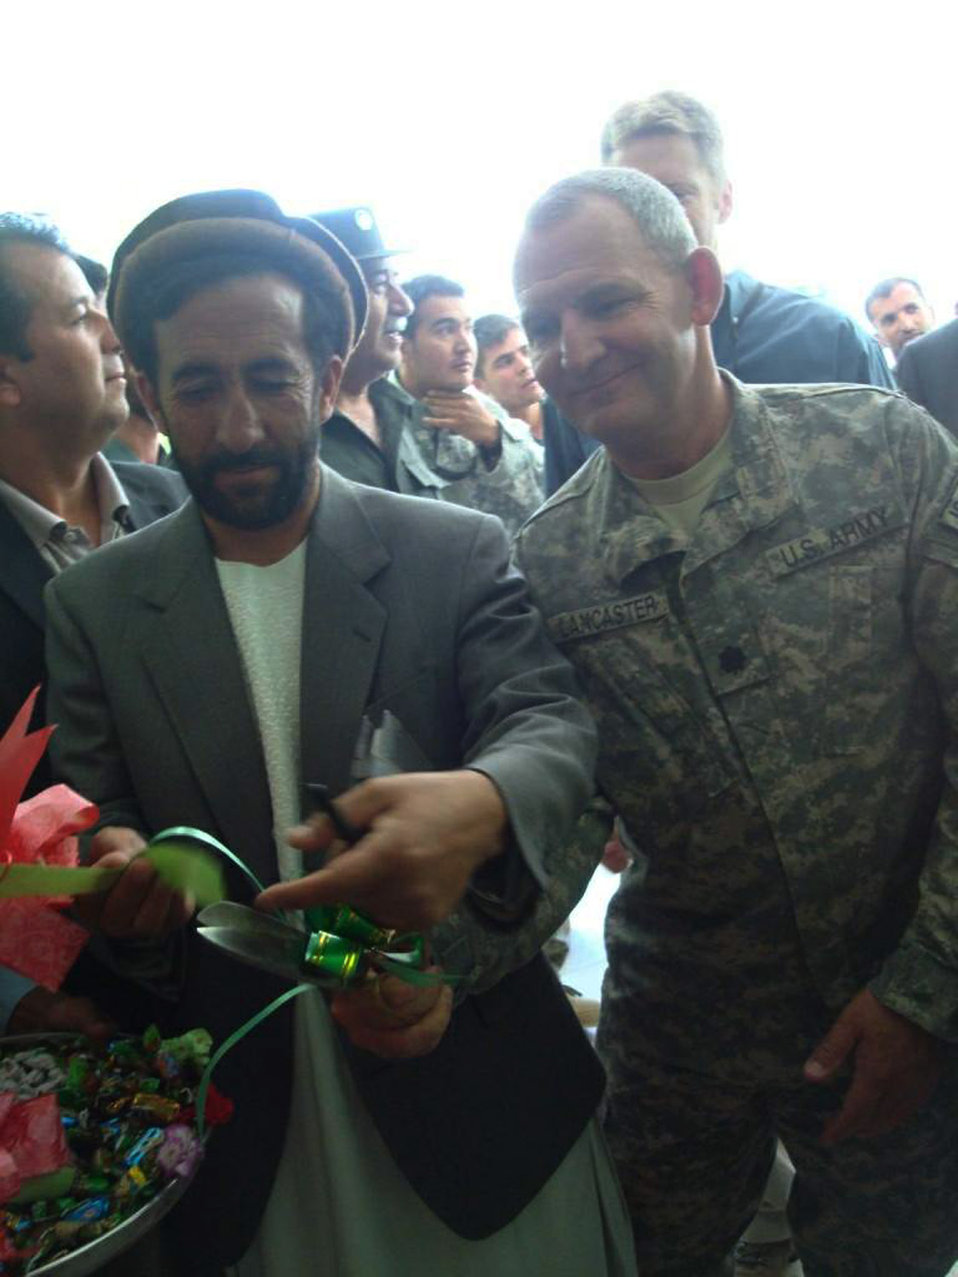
American servicemembers, Afghan leaders celebrate girls' school opening

Army Lt. Col. Steve Lancaster helps an Afghan provincial leader cut the official ribbon during the grand opening of the Haish Saidqi Girls' School June 23 in the Panjshir Province, Afghanistan. Colonel Lancaster is the Provincial Reconstruction Team commander.